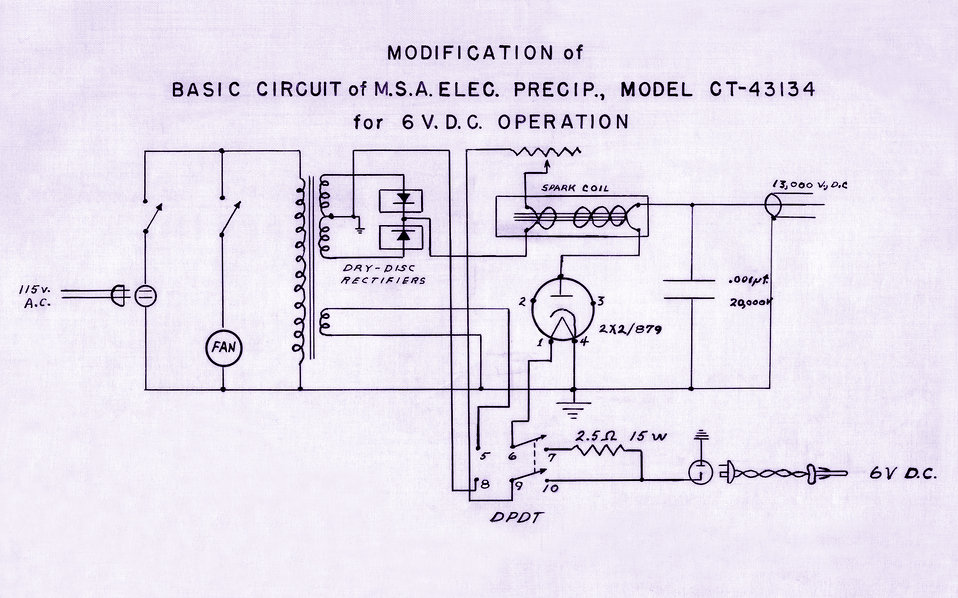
This historical drawing, provided by the Center for Disease Control's (CDC), National Institute for Occupational Safety and Health (NIOSH), detailed how to modify a basic electrical circuit on a Mine Safety Appliances (M.S.A.), electrostatic precipitator, model CT-43134, to handle a 6 volt direct current (D.C.) operation. The device filtered unburned particles from industrial burning operations, such as in the case of coal-fired electrical power plants, by electrically charging, or 'ionizing' the particles. The positively-charged particles then move toward negatively-charged collecting electrodes, where they are trapped. The particles adhere to the collection plates and build up into larger particles. The plates are then tapped, or 'rapped', which loosens the partcles that then fall into hoppers for collection and disposal. The drawing was published in the May, 1952 journal entitled, 'Occupational Health'.